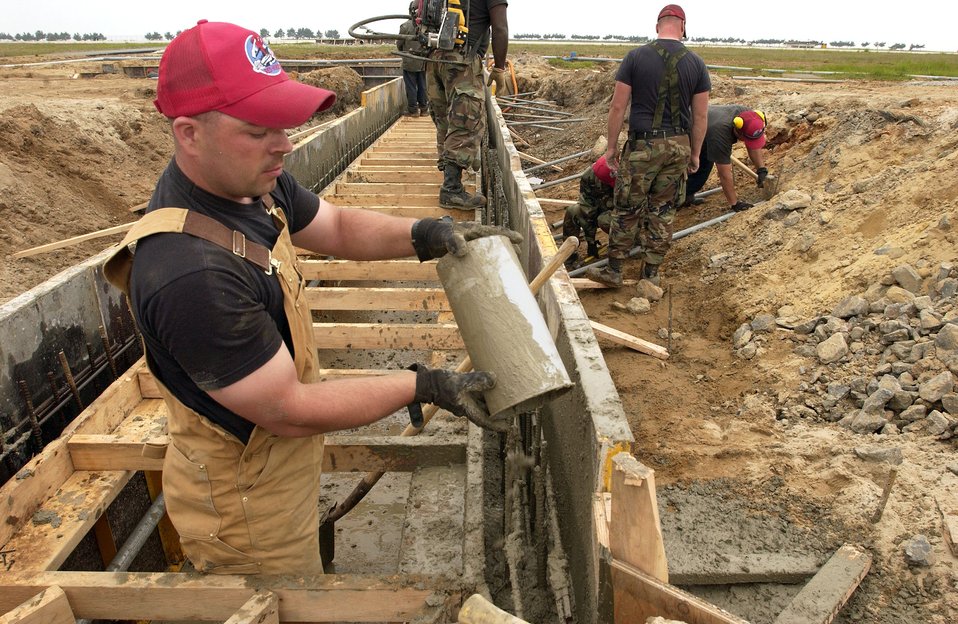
Barrier construction

Staff Sgt. Shawn Vanzandt pours cement on the flightline at Kunsan Air Base, South Korea, on Thursday, May 18, 2006. The barrier is being constructed by Red Horse squadrons from Nellis Air Force Base, Nev.; Barksdale AFB, La.; Osan AB, South Korea; and Andersen AFB, Guam.